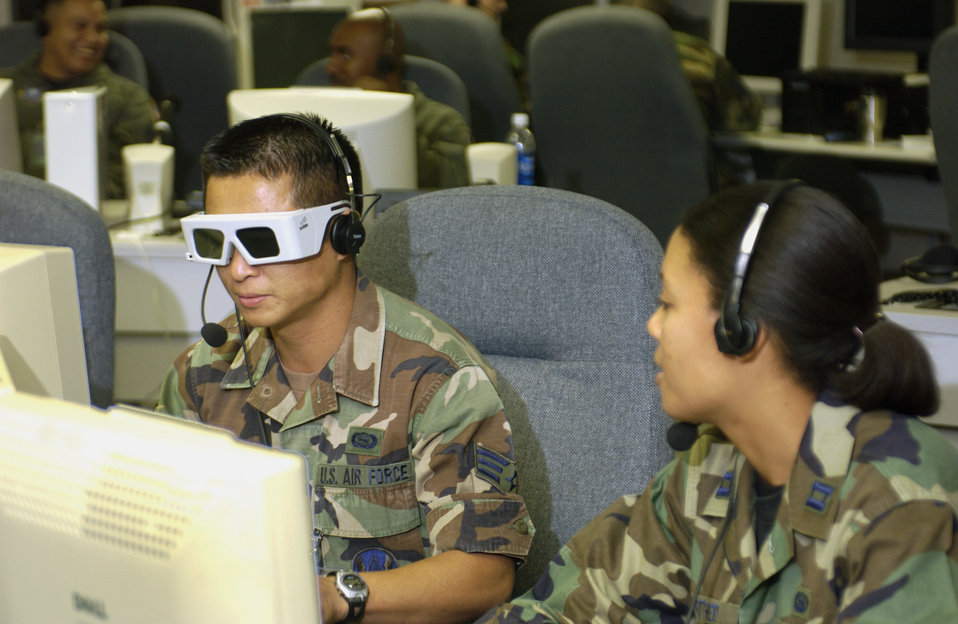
3-D targeting

NELLIS AIR FORCE BASE, Nev. -- Capt. Tiamo Strother watches Senior Airman Chhay Uy use the Raindrop goggles during a Red Flag war-training scenario. The goggles are used in a 3-D presentation to select the exact point for targeting. The airmen provide target coordinates for strike aircraft to hit enemy targets. Both airmen are assigned to the 32nd Air Operations Group from Ramstein Air Base, Germany.